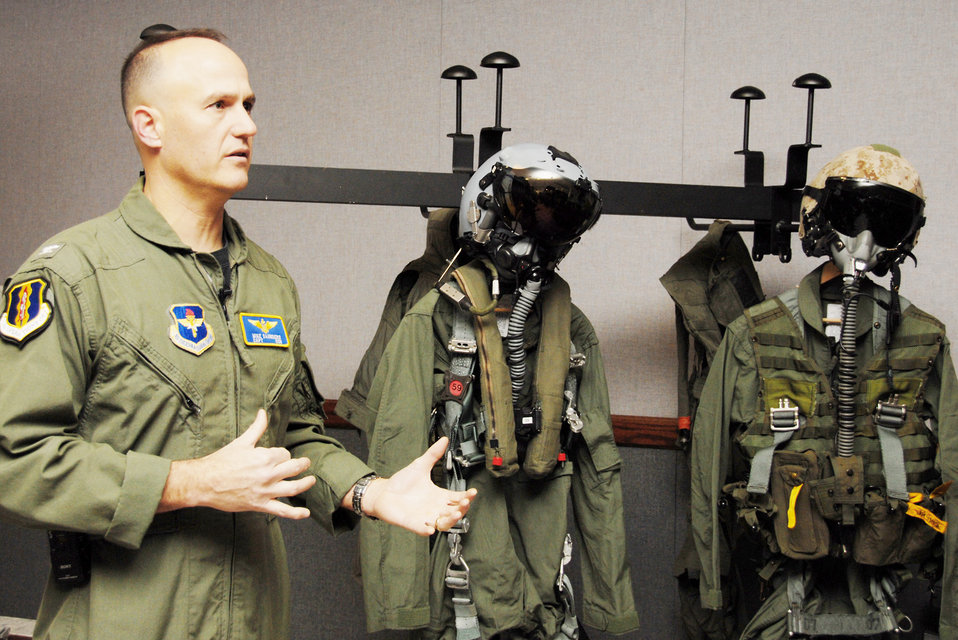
F-35 pilots 'measure' up, move closer to training

Navy Capt. Mike Saunders describes the F-35 Lightning II joint strike fighter pilot equipment after getting measured for the new suit Feb. 25, 2010, at Eglin Air Force Base, Fla. Captain Saunders is the 33rd Operations Group deputy commander.